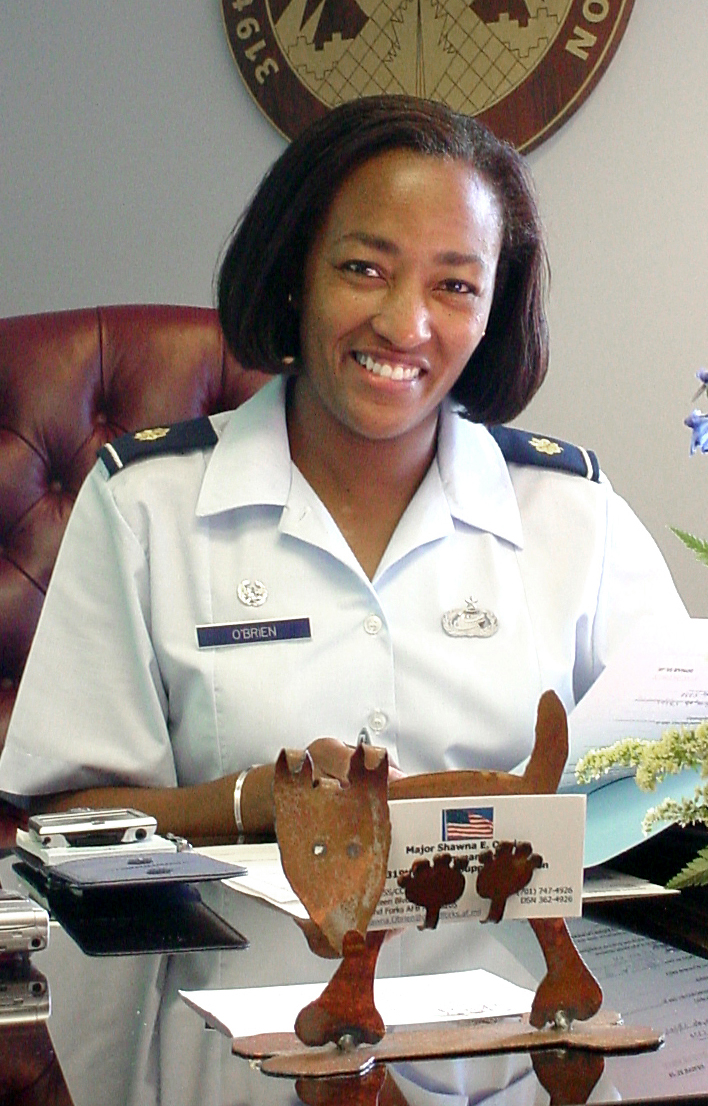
Twin sisters assume command of AMC squadrons

GRAND FORKS AIR FORCE BASE, N.D. -- Maj. Shawna O'Brien is the new commander of the 319th Mission Support Squadron here. Her twin sister, Maj. Dawn Keasley, took command of the 375th MSS at Scott Air Force Base, Ill., on the same day.